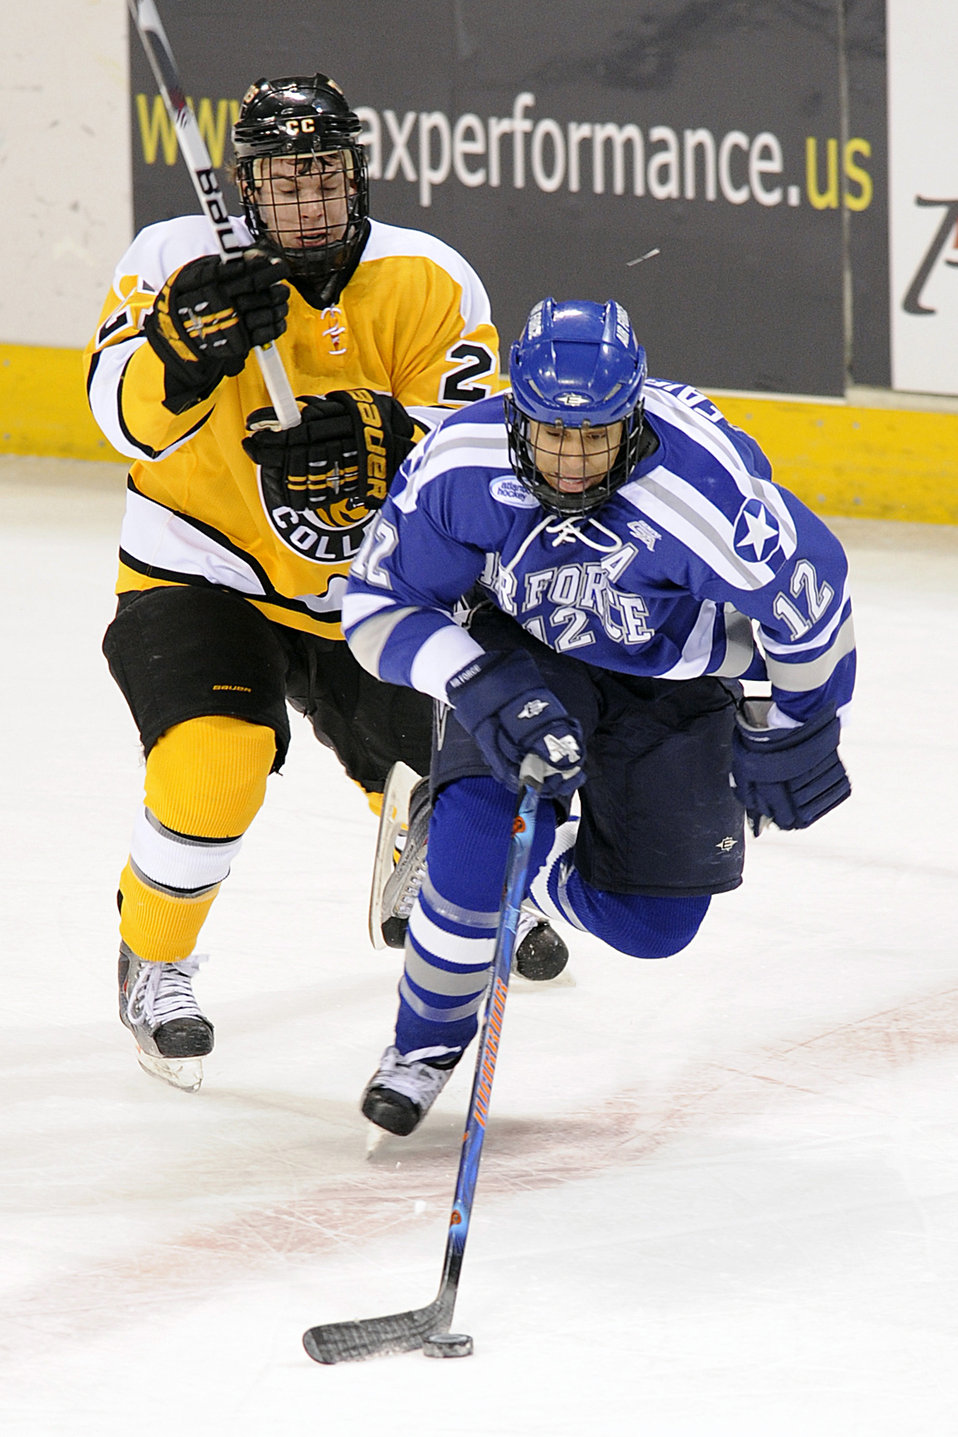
Falcons lose in match with Colorado Tigers

U.S. Air Force Academy senior forward Matt Fairchild skates away from traffic as 10th-ranked Colorado College beat Air Force 2-0 in a non-conference hockey game Feb. 5, 2010, at the World Arena in Colorado Springs, Colo. Air Force fell to 12-11-6 overall and returns to the ice at RIT, Feb. 26-27 in Rochester, NY.